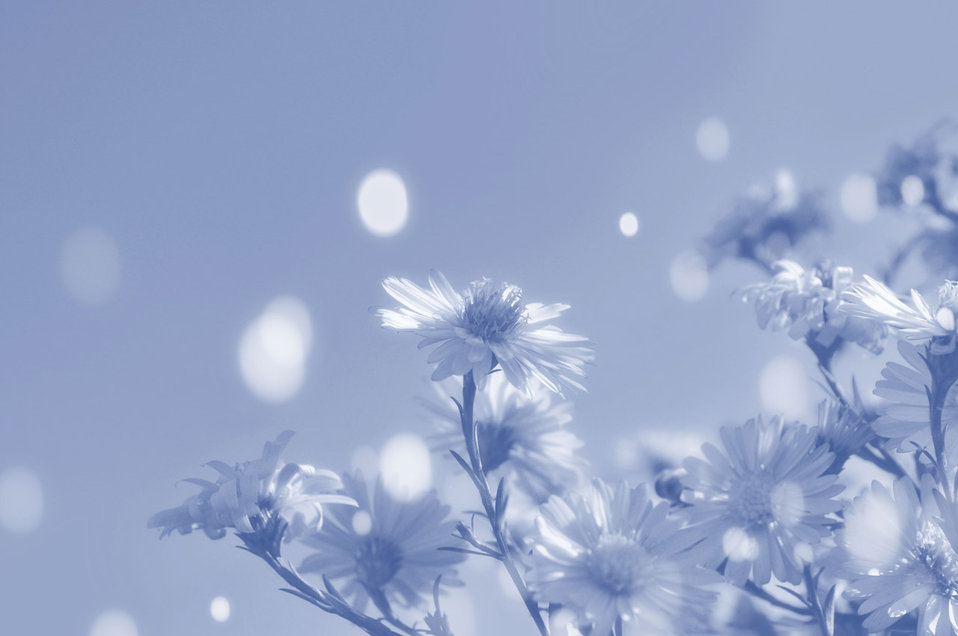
Flowers on a blue background.